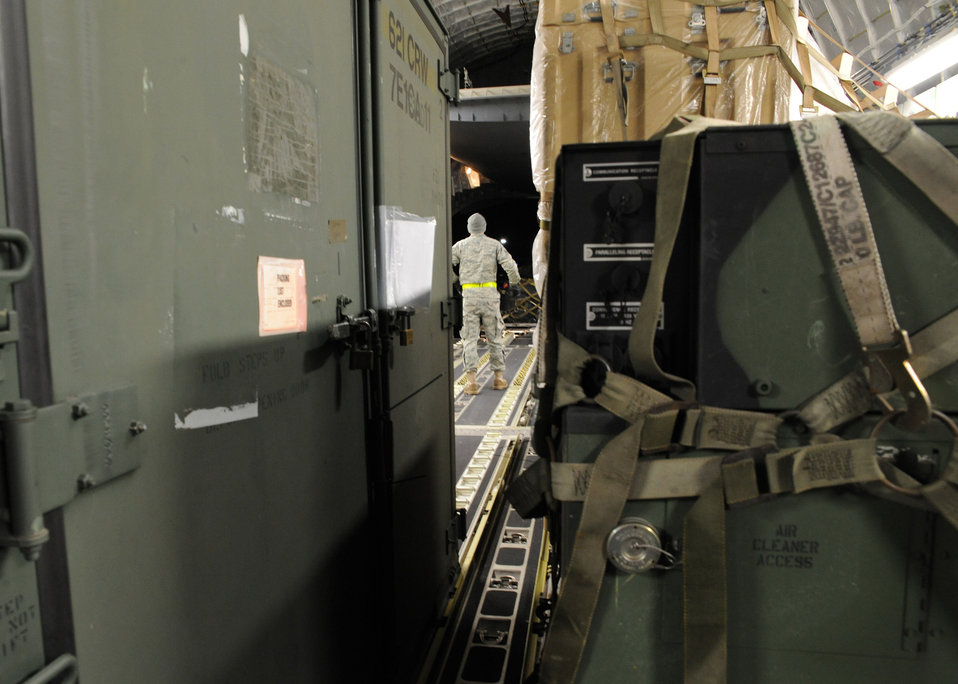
Haiti Humanitarian Effort

An Airman waits for equipment to be loaded onto a Charleston AFB C-17 at Joint Base McGuire-Dix-Lakehurst, New Jersey, Jan. 15, 2010. The Charleston C-17 was used to transport equipment needed to aid the humanitarian effort in Haiti.